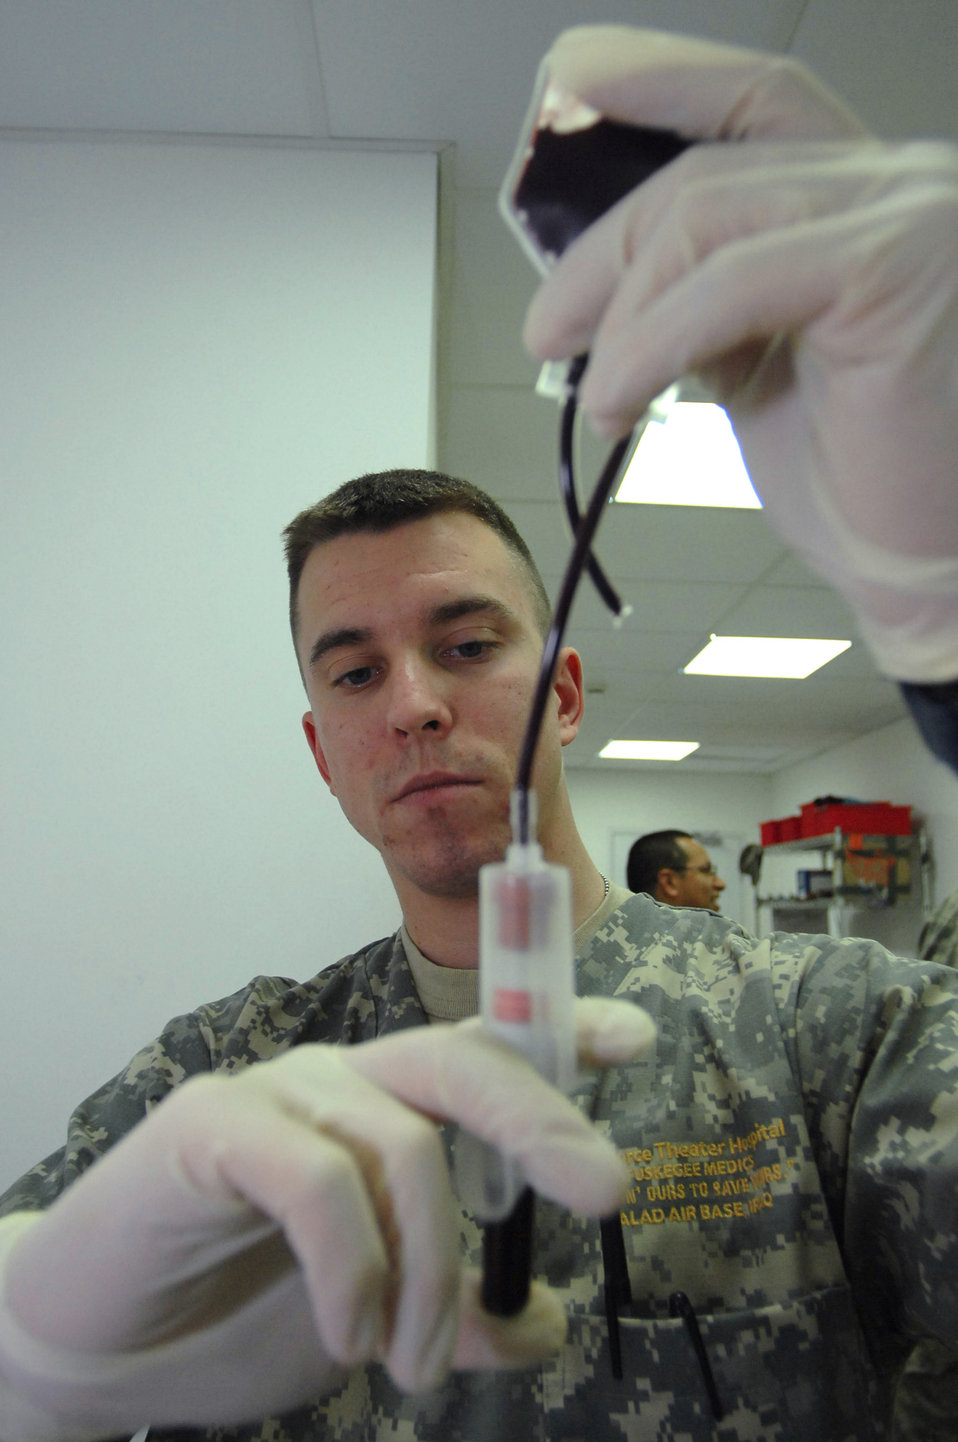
Providing safer blood products faster to wounded warriors

Army Spc. Lamar Elwell draws a sample of whole blood for testing Jan. 28 at the Air Force Theater Hospital at Balad Air Base, Iraq. Before donated blood is administered to patients, a sample is extensively tested to ensure its purity and quality. Specialist Elwell is a 153rd Blood Support Detachment medical lab technician deployed from Fort Lewis, Washington.